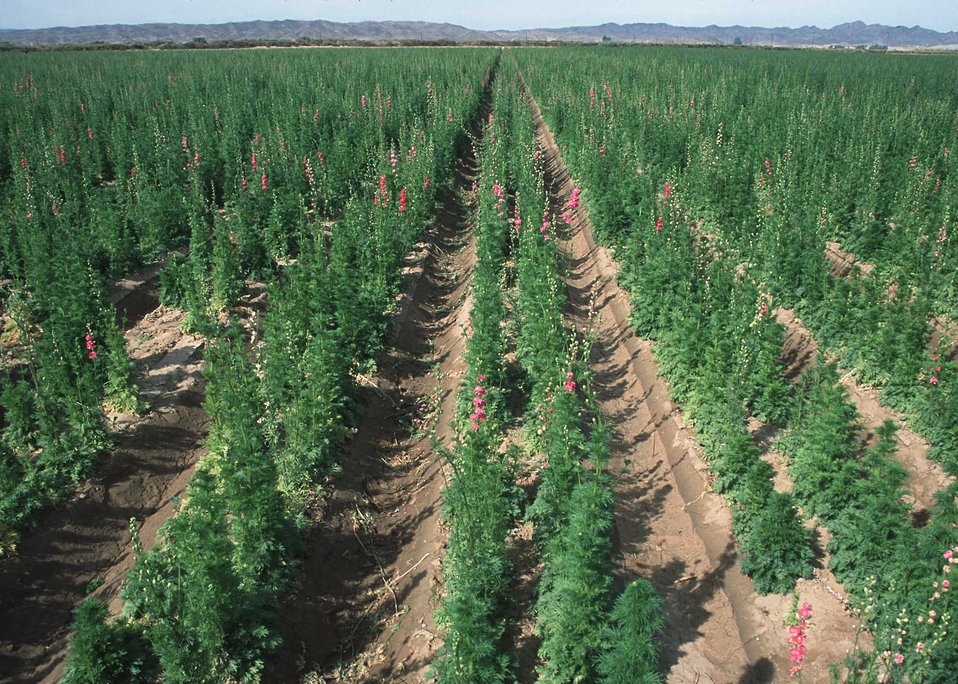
An alternative cash crop of Lupine for the ornamental market growing in Yuma , Az.